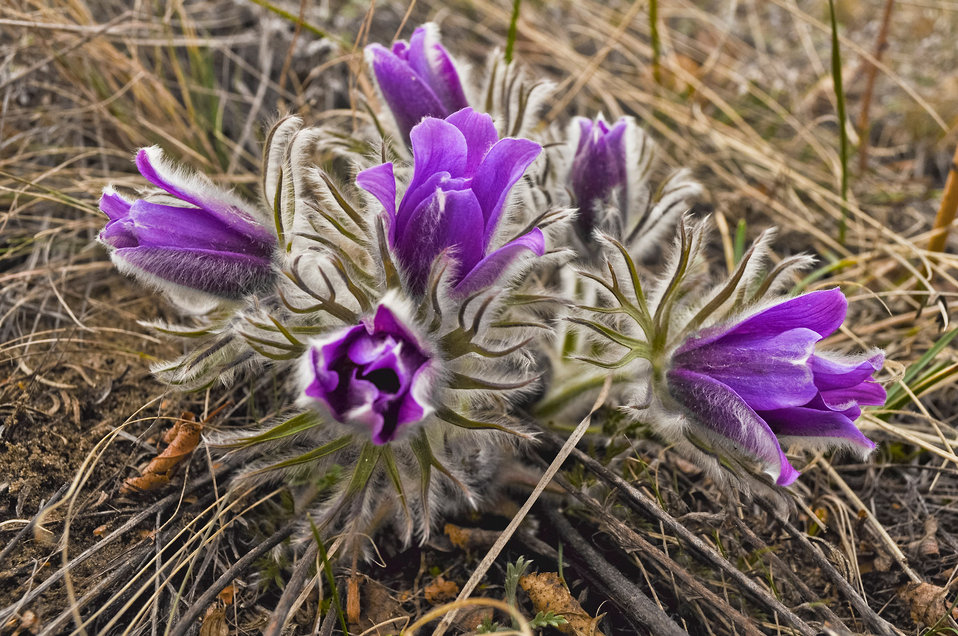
Snowdrops blossomed in the forest.